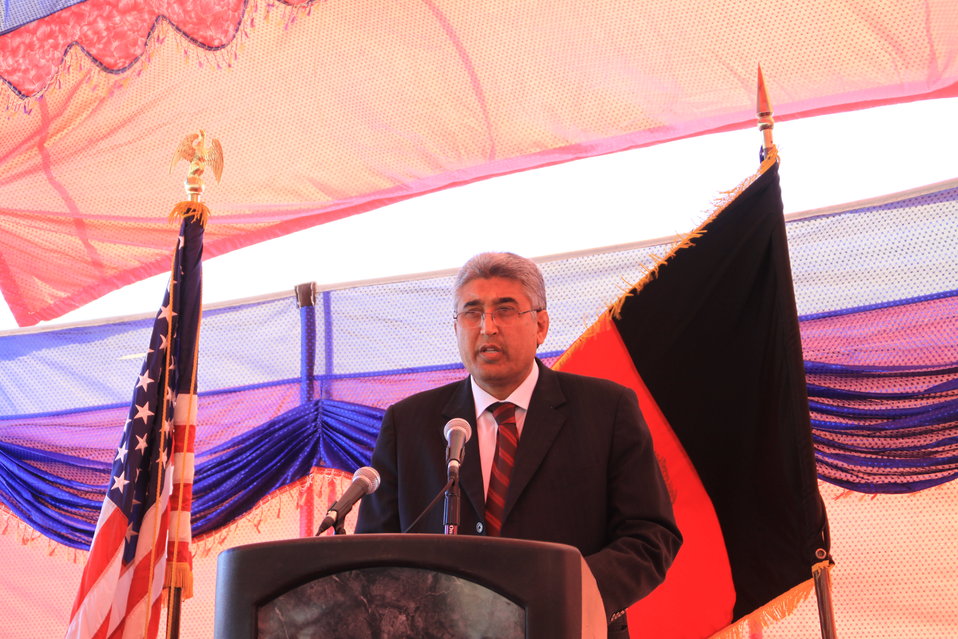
AVIPA Plus Wheat Seed Distribution 101005

US Ambassador Karl Eikenberry and USAID Acting Mission Director Kevin Brownawell joined the Minister of Agriculture, Irrigation and Livestock, H.E. Minister Mohammed Rahimi in signing a Memorandum of Understanding and distributing vouchers to area farmers for wheat and fertilizer.

US Ambassador Karl Eikenberry and USAID Acting Mission Director Kevin Brownawell joined the Minister of Agriculture, Irrigation and Livestock, H.E. Minister Mohammed Rahimi in signing a Memorandum of Understanding and distributing vouchers to area farmers for wheat and fertilizer.